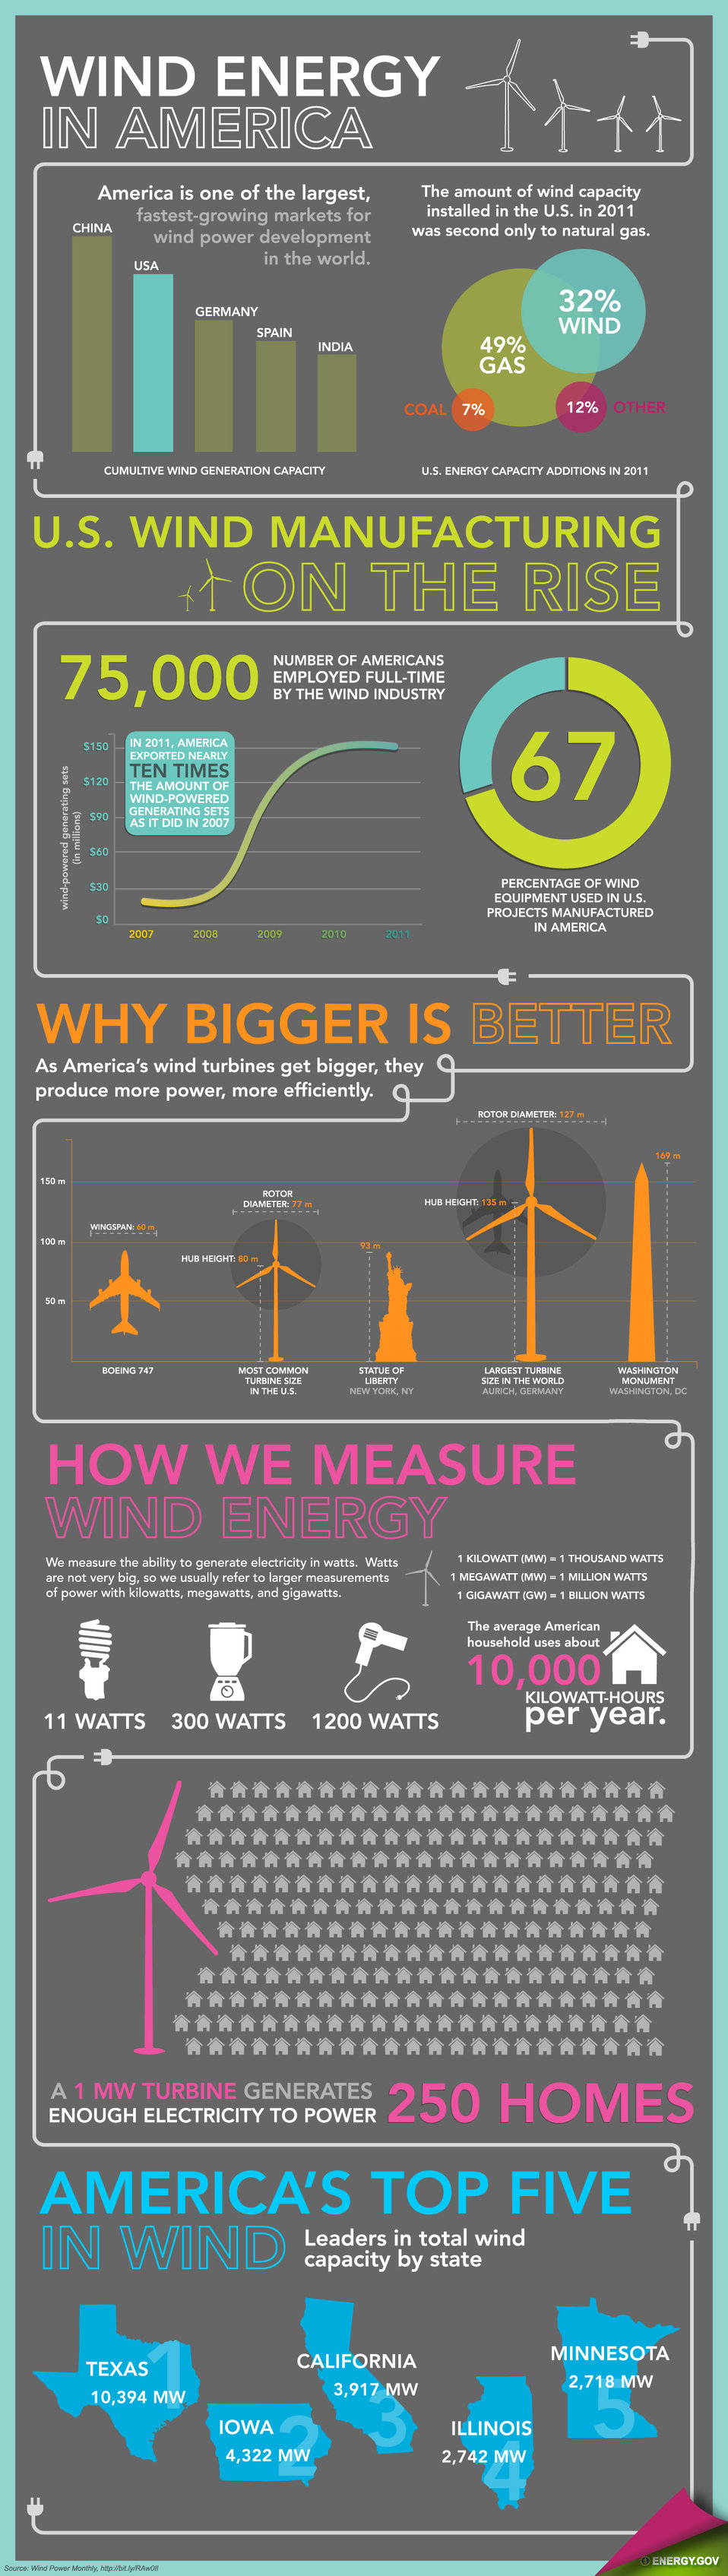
Wind Energy in America